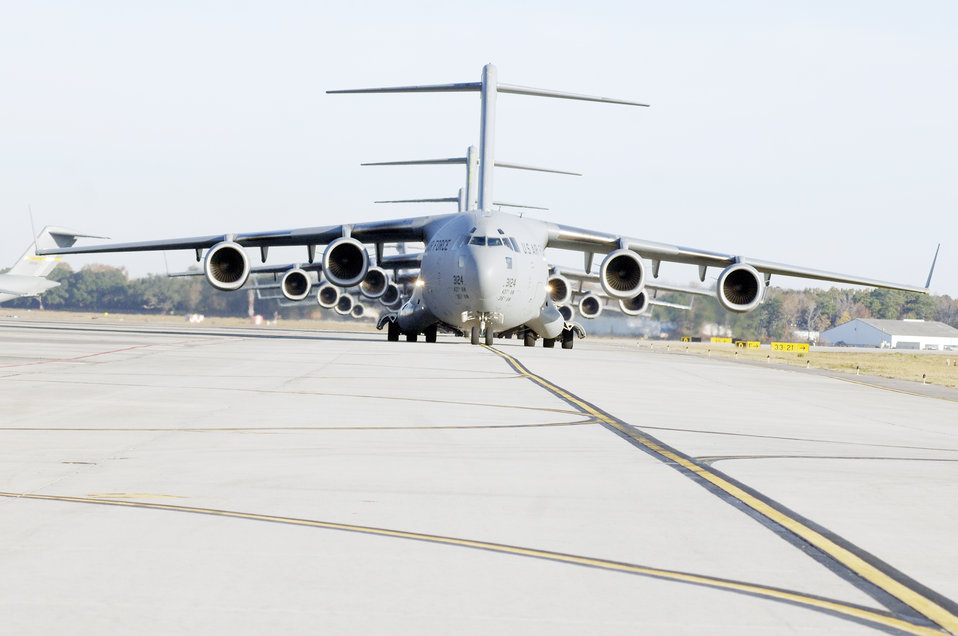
'Operation Thunderstruck;' train to fly, fight and win

C-17 Globemaster IIIs from Charleston Air Force Base, S.C., taxi prior to take-off, in preparation for a strategic brigade airdrop exercise over the North Auxiliary Airfield Dec. 16, 2009, near North, S.C., demonstrating the global projection of U.S. airpower. Airborne Soldiers from the 2-319th Airborne Field Artillery, 82nd Airborne Division at Ft. Bragg, N.C., were airdropped in the exercise along with cargo pallets to simulate the seizure of a remote airfield, providing a joint training opportunity for the Airmen and Soldiers. The training mission included airdrops over North Auxiliary Airfield, aerial refueling training and simulated aeromedical evacuation.